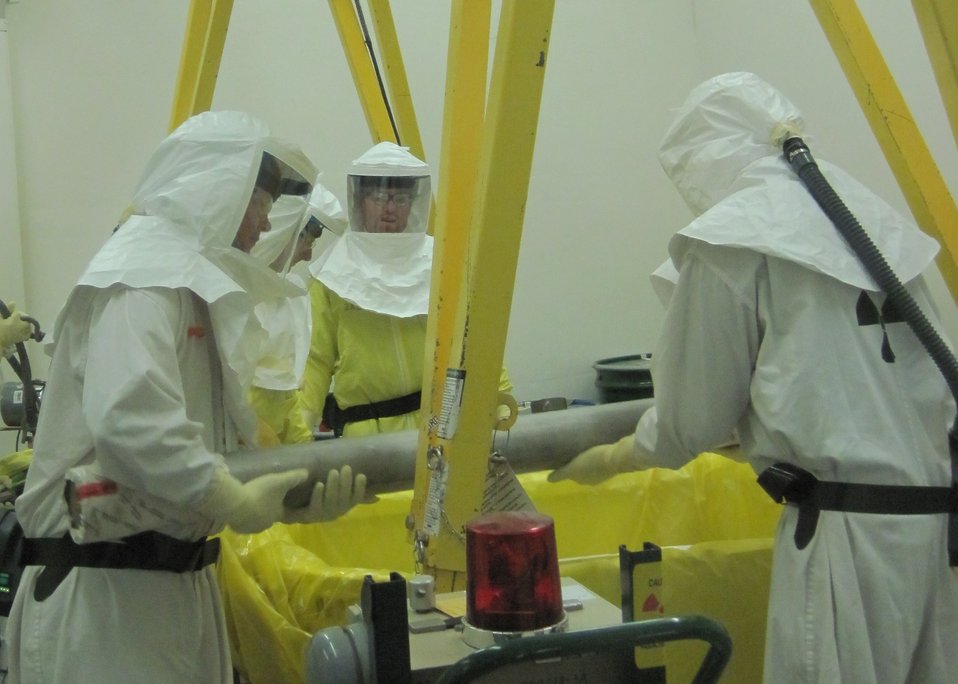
Process vacuum loaded for disposal

A section of process vacuum piping is loaded into a waste container for offsite shipment and disposal as transuranic waste. Since removal of the highly contaminated piping began in August 2010, CHPRC has removed 110 feet (December 2010).